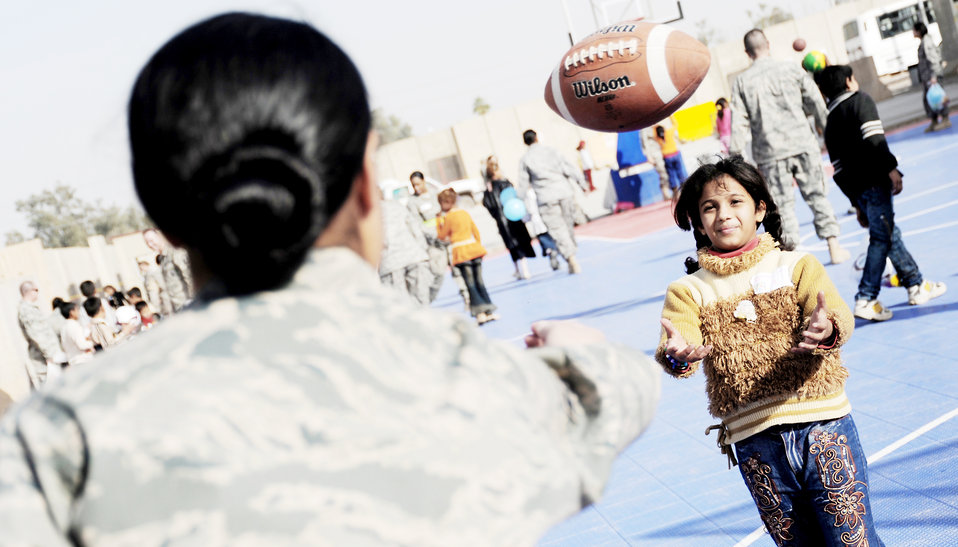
Civil engagement program helps prepare Iraq for future

Airman 1st Class Valika Lagimaina plays with an Iraqi child during Iraqi Kids Day at the H-6 recreation area Dec. 19, 2009, at Joint Base Balad, Iraq. Airman Lagimaina is assigned to the 332nd Expeditionary Logistics Readiness Squadron.